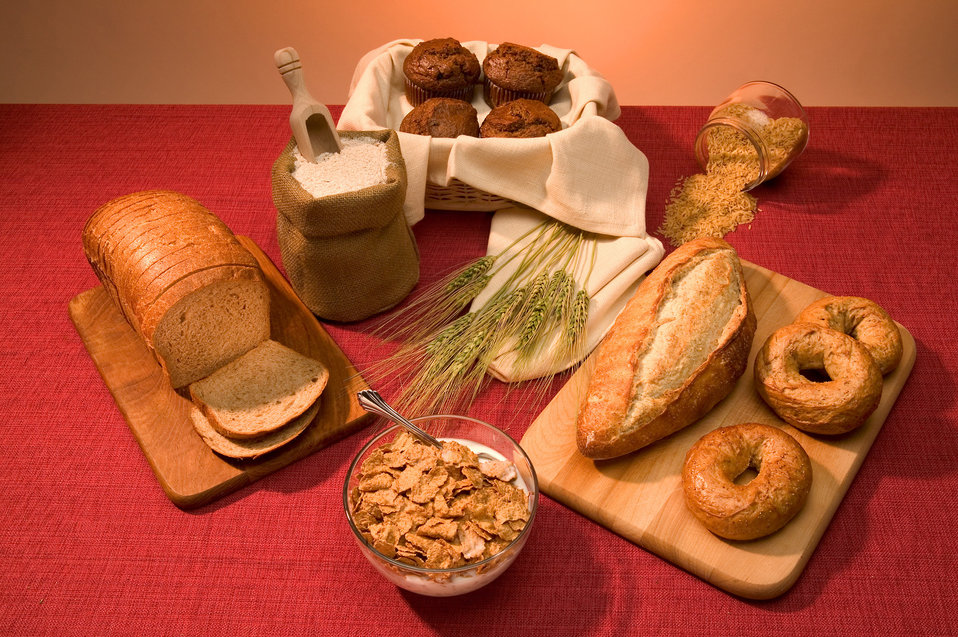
Bran muffins, brown rice, whole-wheat loaf bread, whole-wheat bagels, whole-grain cereal, whole-wheat sliced bread, and whole-wheat flour contain 2.5 grams or more of fiber on Oct. 4, 2004.